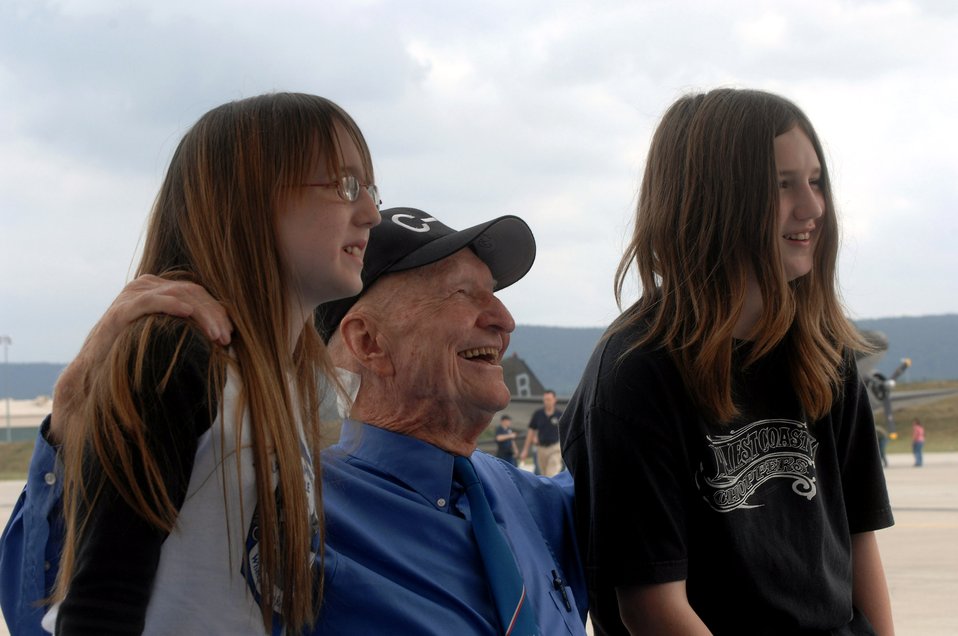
Command celebrates Air Force's 60th Anniversary

Retired Col. Gail Halvorsen, the Berlin Candy Bomber, takes a break from signing autographs for a photo opportunity with Natasha and Alex Harris during U.S. Air Forces in Europe's Air Force 60th Anniversary celebration at Ramstein Air Base, Germany, Aug. 11.